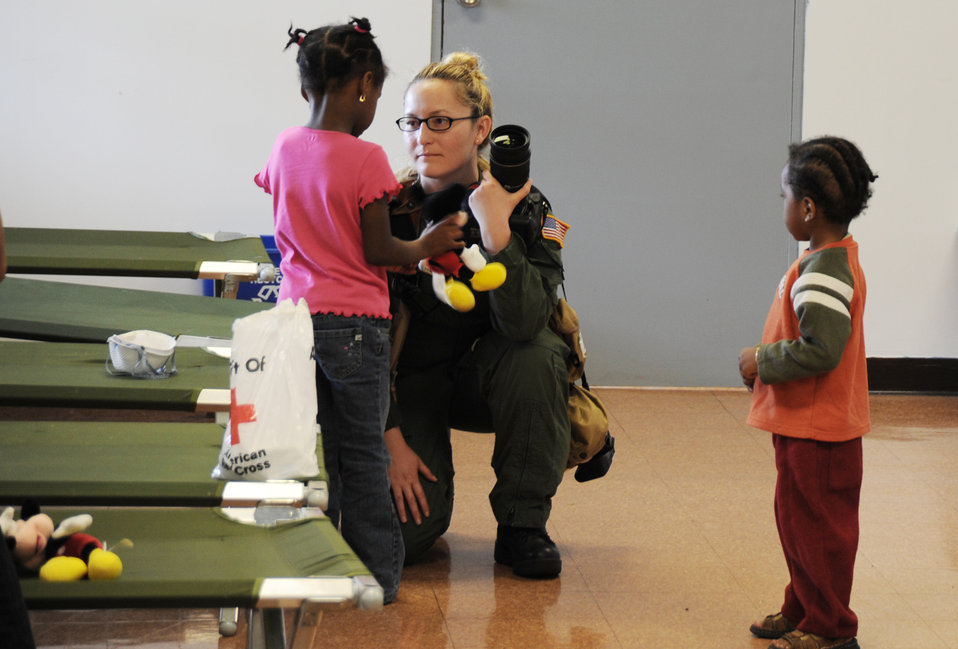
What does Mickey have to say?

At the Muniz Air National Guard Base in San Juan, P. R., Staff Sgt. Desiree Palacios takes a moment to listen to a Haitian-American child recently evacuated from earthquake-ravaged Haiti by an aircrew from the Puerto Rico ANG Jan. 21, 2010. Sergeant Palacios is a photojournalist on assignment from Defense Media Activity-San Antonio.